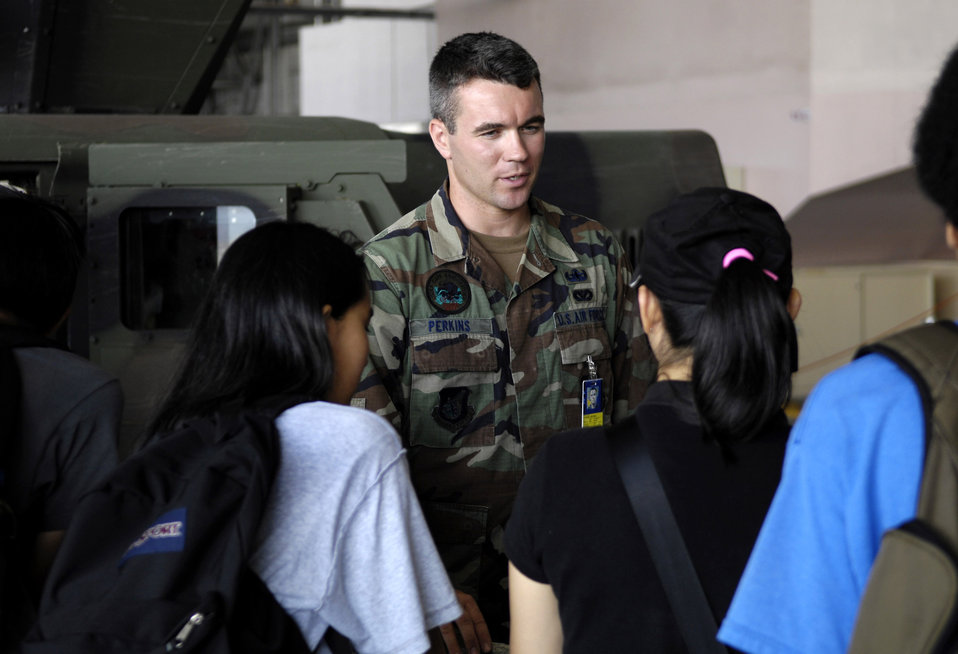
Hickam hosts Education Day

Senior Airman Michael Perkins talks to students Sept. 13 at Hickam Air Force Base, Hawaii during Air Force Education Day. Members of 13th Air Force hosted the day for Hawaii public school math and science students as part of Air Force Week Honolulu. Airman Perkins is an explosive ordnance disposal technician from Hickam.